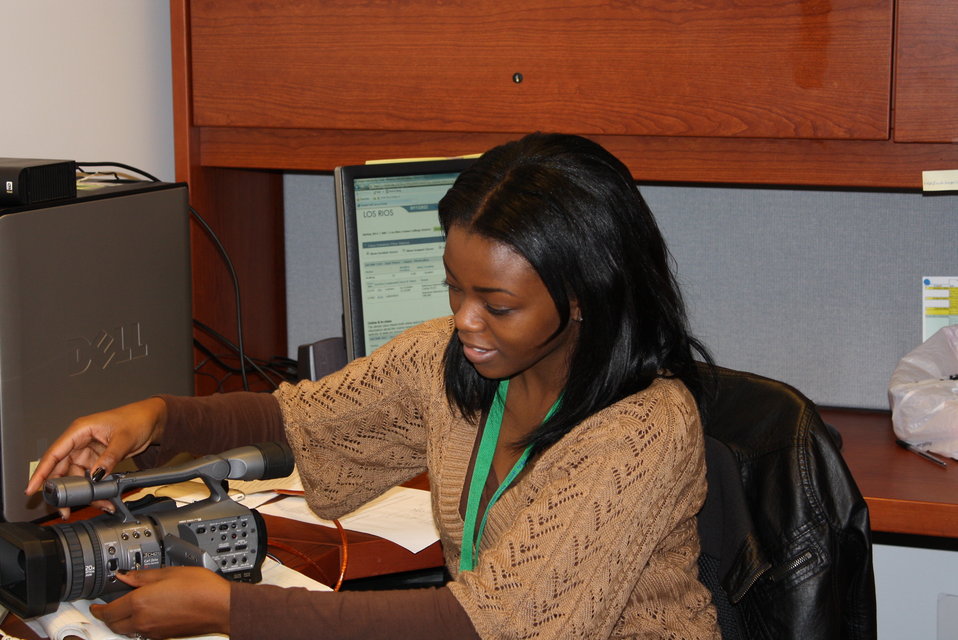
Student works at USFWS for new media projects

Student Kanisha Allen is working at the Pacific Southwest Regional Office headquarters in Sacramento, Calif., creating products for the region's new media web sites.